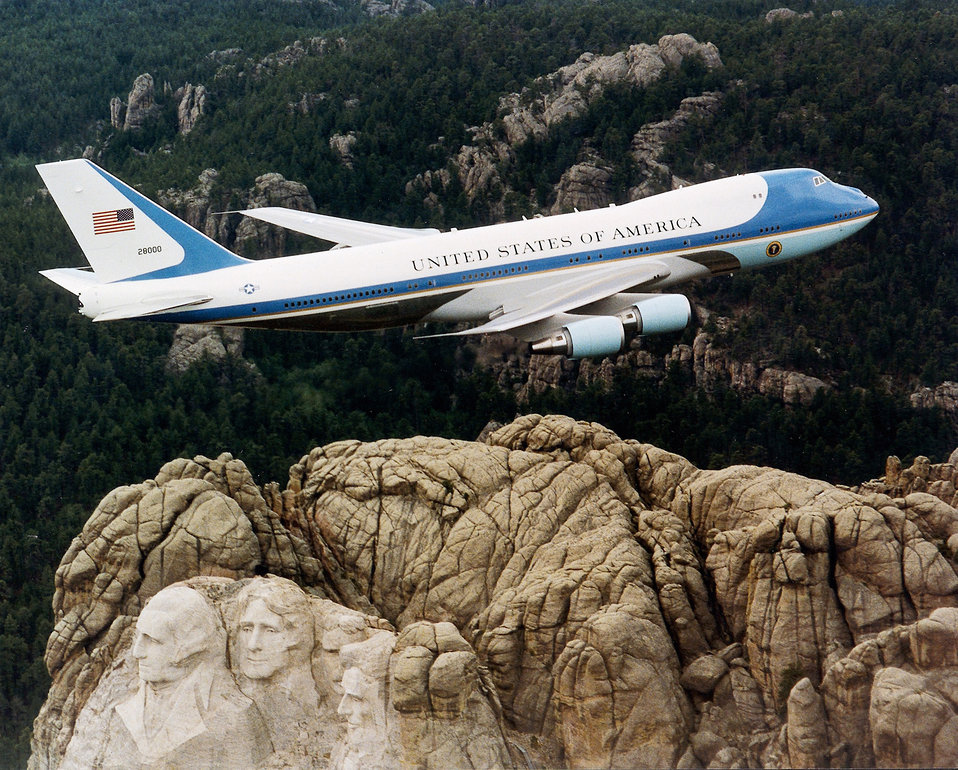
VC-25A

FILE PHOTO -- Air Force One flies over Mount Rushmore. Principal differences between the VC-25A and the standard Boeing 747, other than the number of passengers carried, are the electronic and communications equipment aboard Air Force One, its interior configuration and furnishings, self-contained baggage loader, front and aft air-stairs, and the capability for in-flight refueling. These aircraft are flown by the presidential aircrew, maintained by the presidential maintenance branch, and are assigned to Air Mobility Command's 89th Airlift Wing, Andrews Air Force Base, Md.